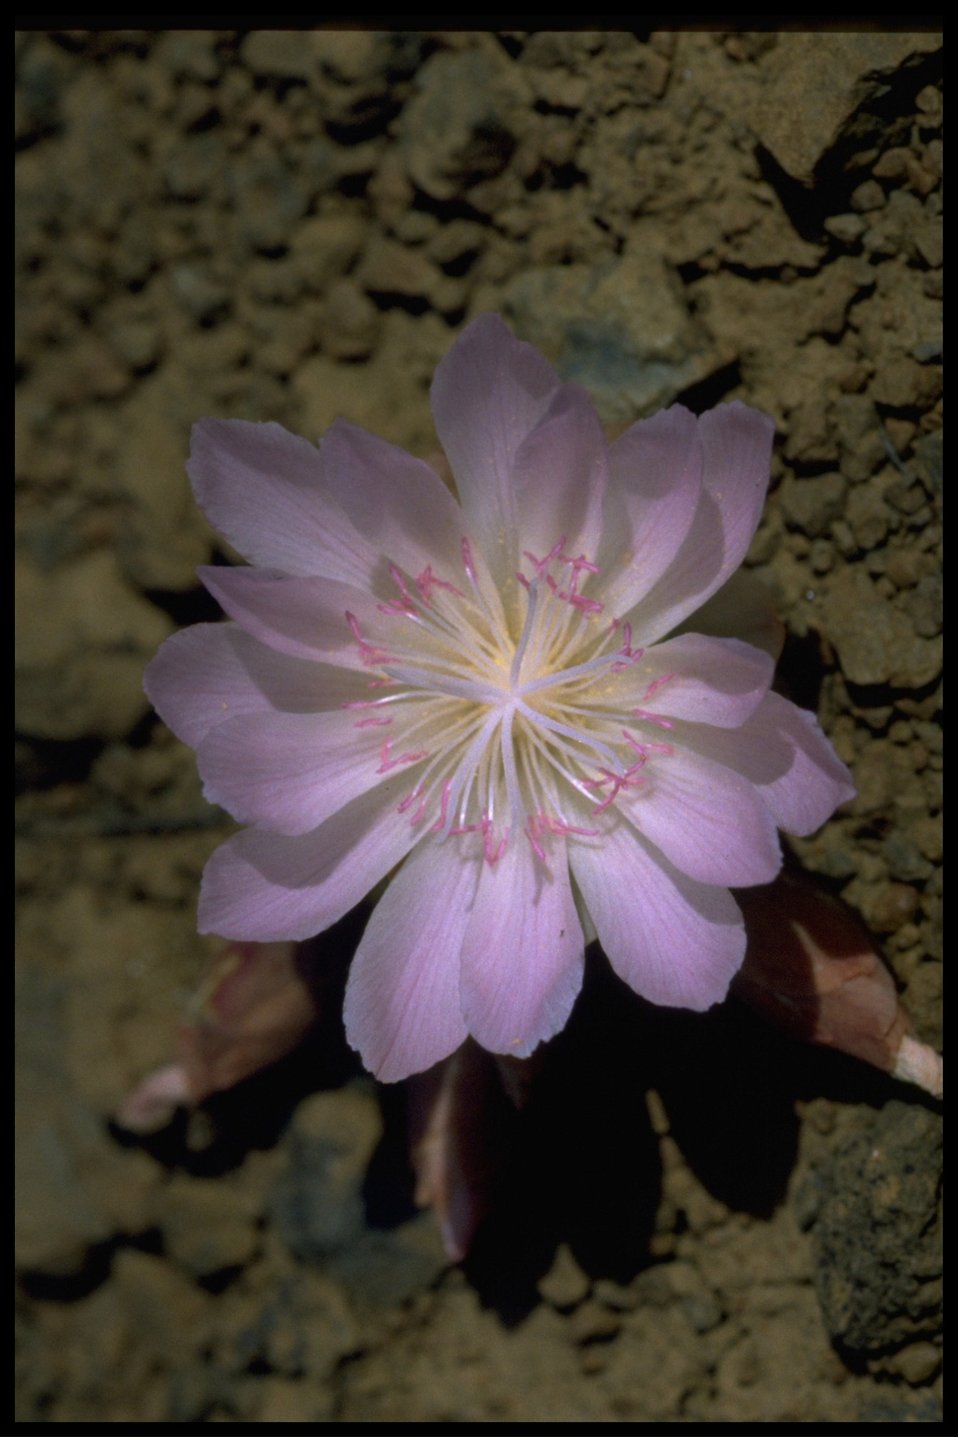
Closeup shot of Bitterroot wildflower.